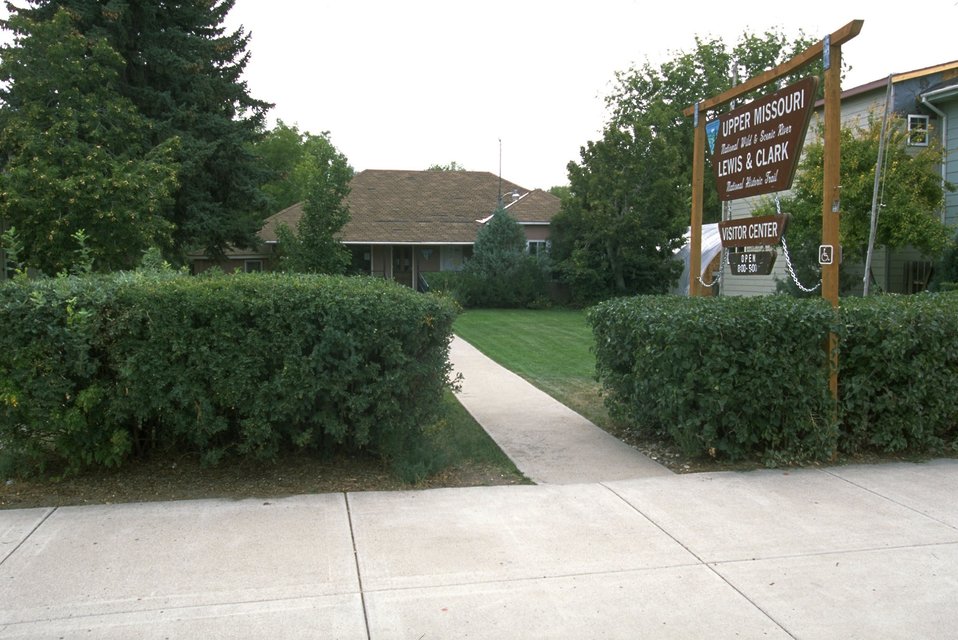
Old BLM visitor contact station in Fort Benton